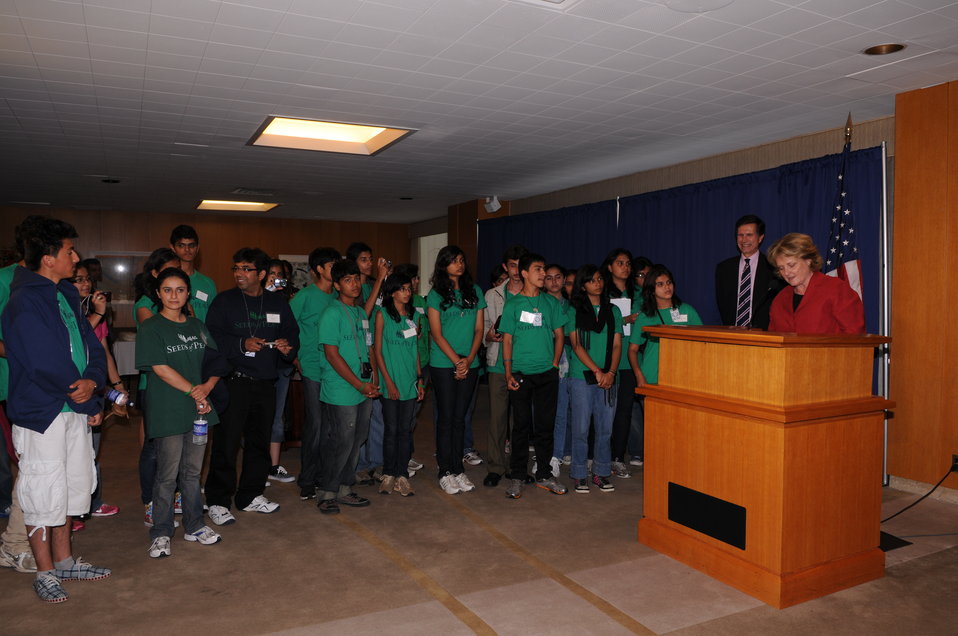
Under Secretary Judith McHale Delivers Remarks

U.S. Under Secretary of State for Public Diplomacy and Public Affairs Judith McHale delivers remarks at the Seeds of Peace reception at the U.S. Department of State in Washington, D.C., on July 14, 2010.